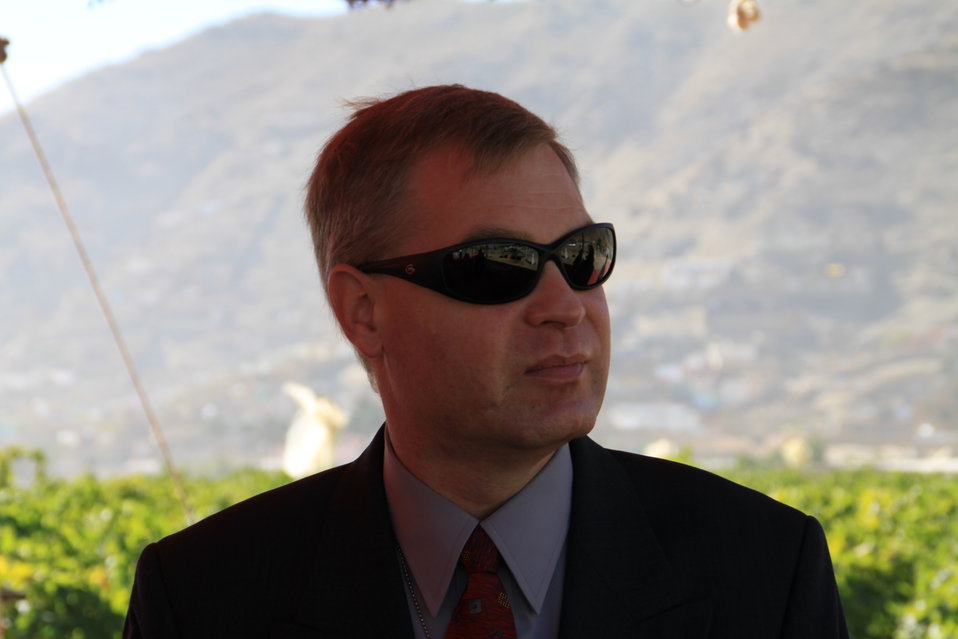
AVIPA Plus Wheat Seed Distribution 101005

US Ambassador Karl Eikenberry and USAID Acting Mission Director Kevin Brownawell joined the Minister of Agriculture, Irrigation and Livestock, H.E. Minister Mohammed Rahimi in signing a Memorandum of Understanding and distributing vouchers to area farmers for wheat and fertilizer.